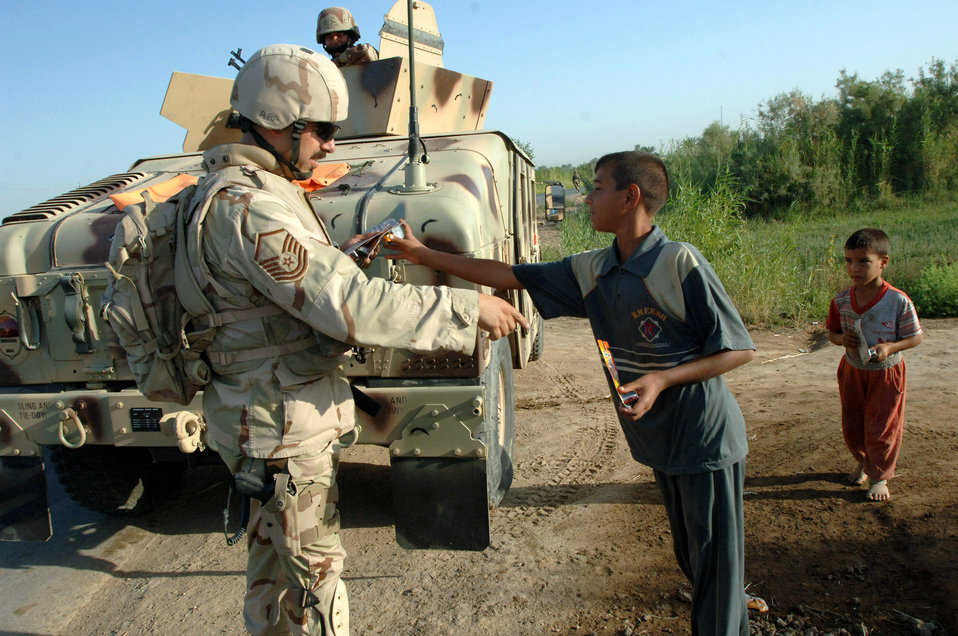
Making friends

Master Sgt. Christopher Nolan gives out toys to children before the start of an Army exercise in Baghdad, Iraq, on Saturday, June 24. Sergeant Nolan is a combat videographer with the 1st Combat Camera Squadron at Charleston Air Force Base, S.C.